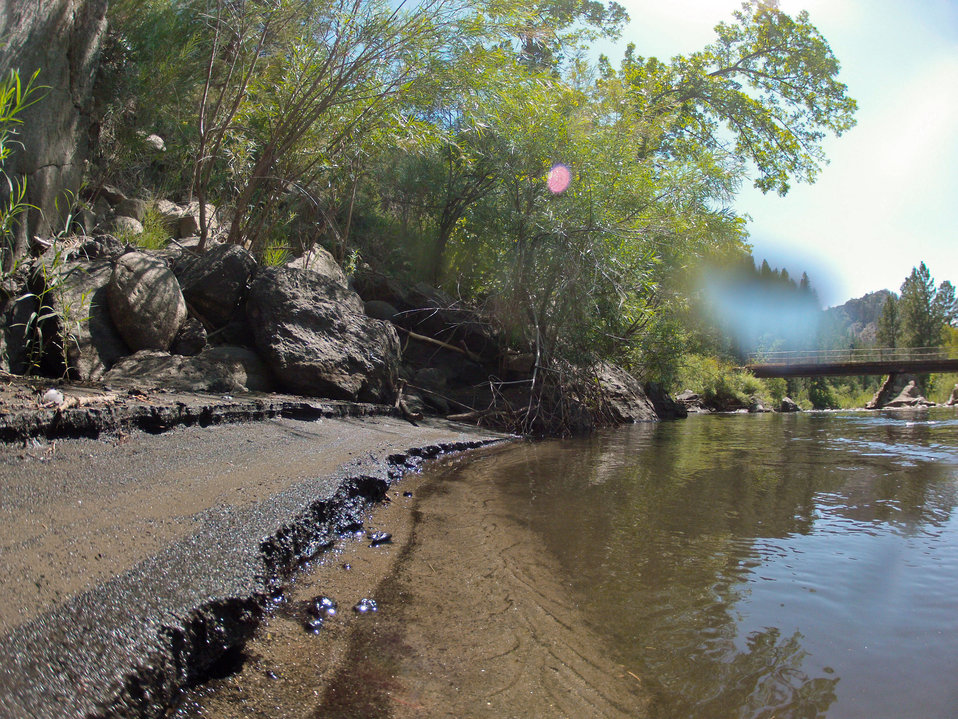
A confluence of two tributaries, the Cache la Poudre and the North Fork of the Cache la Poudre, near Seaman Reservoir, 60 miles north of Denver, Colorado on Friday, July 20, 2012, have been transformed from clear mountain waters to a nearly black water, heavily laden with ash, silt, and burnt debris that was recently washed down mountainsides by thunderstorms. The mountainsides were burned by the Hewlett Gulch Fire (May 14, 2012), in the Poudre Canyon area. At its peak more than 400 firefighters were battling fires pushed by 50 mph winds. When the last embers were cooled, more than 12-square miles lay blacked at a cost of approximately 3.2 million dollars. The aerial distribution of straw has successfully kept nearby Seaman Reservoir clean for the drinking water of the City of Greeley. Forest Service lands receive straw, while private and other lands receive a seed mix and straw to promote ground cover plant growth on ash-covered lands. In total, 1,800 tons of straw will be applied during the 14-day operation. One quarter of the cost was paid by the City of Greeley and the U.S. Department of Agriculture funded the remainder.